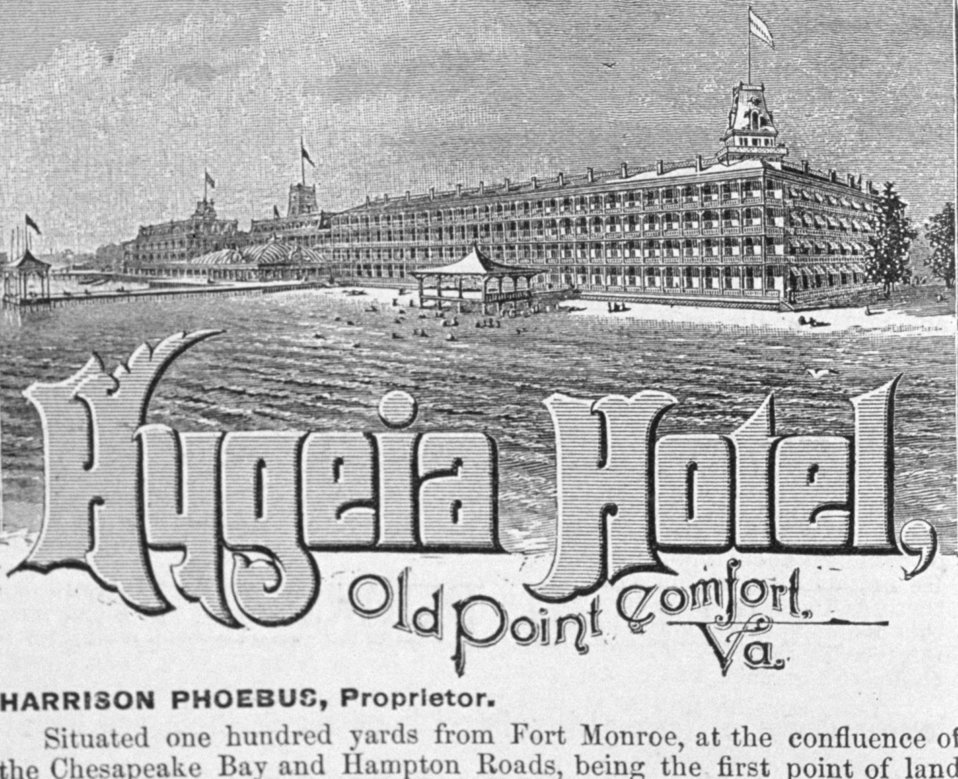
The Hygeia Hotel at Old Point Comfort, Virginia. Advertised at the end of 'Florida for Tourists, Invalids, and Settlers' by George M. Barbour, 1881.